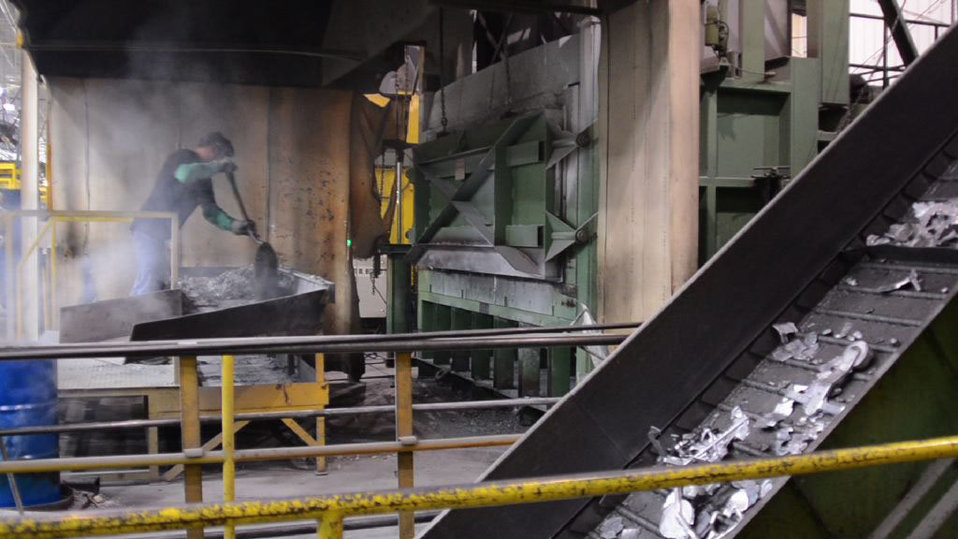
Melter operator Carl Welborn faces flames and intense heat to forklift foundry ingots into; and shovels slag out of a furnace crucible at Port City Group’s Port City Castings Corporation, manufacturer of high-pressure aluminum die-castings, mostly for the automotive industry, in Muskegon, MI, facility on Wednesday July 20, 2011. Port City Group boosted its employment by 12 percent over last year thanks to two Rural Business Guaranteed Loans totaling $9.6 million. In its 80,000 sq. ft. facility, machines that range from 800 – 1,600 tons, and cast A380 aluminum alloy products from melted ingots of aluminum, into automotive components of U.S.A. made vehicles. The process features a variety of robotic presses; computer controlled machining; quality control facility; and complete measurement and testing laboratory. In 2009 banks were backing out of loans for PCG equipment purchase agreements. The U.S. Department of Agriculture (USDA) loan guarantee helped make the loan possible with its guarantee. PCG obtained the needed robotic and other equipment. This resulted in a stable workforce that has since grown. When asked about their USDA experience, Port City Group Sales Manager Laura LaGuire said, “It was great! They were very helpful. Everything that came up was handled smoothly, the money came in place when it was needed, and it was a very smooth transition.”